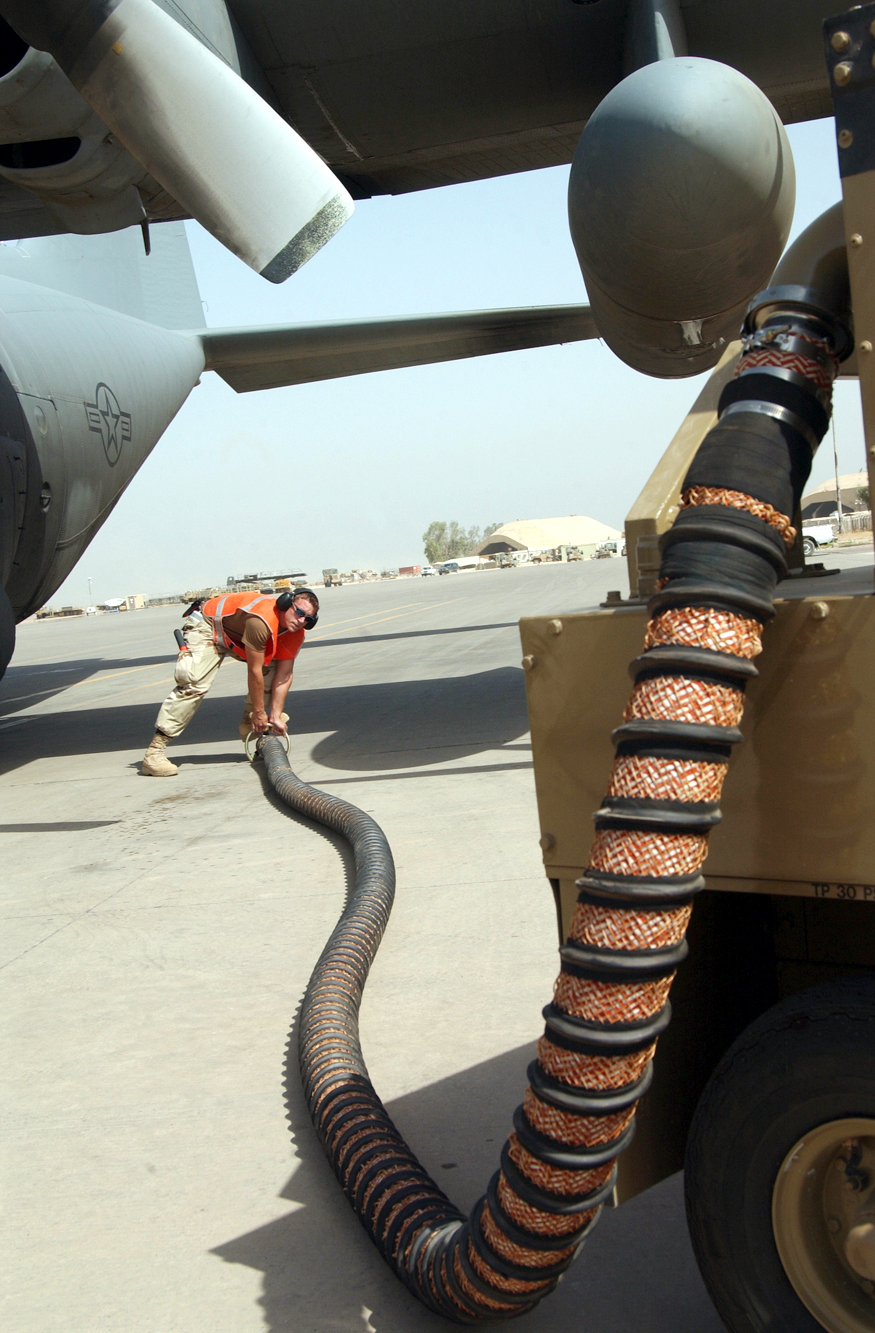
Working out the kinks

BALAD AIR BASE, Iraq -- Senior Airman Zoltan Keogh prepares an air hose before connecting it to a C-130 Hercules here. Airman Keogh is a crew chief with the 332nd Expeditionary Air Mobility Squadron and is deployed from the 62nd Aircraft Maintenance Squadron at McChord Air Force Base, Wash. The C-130 Hercules is deployed from the Georgia Air National Guard's 165th Airlift Wing in Savannah.